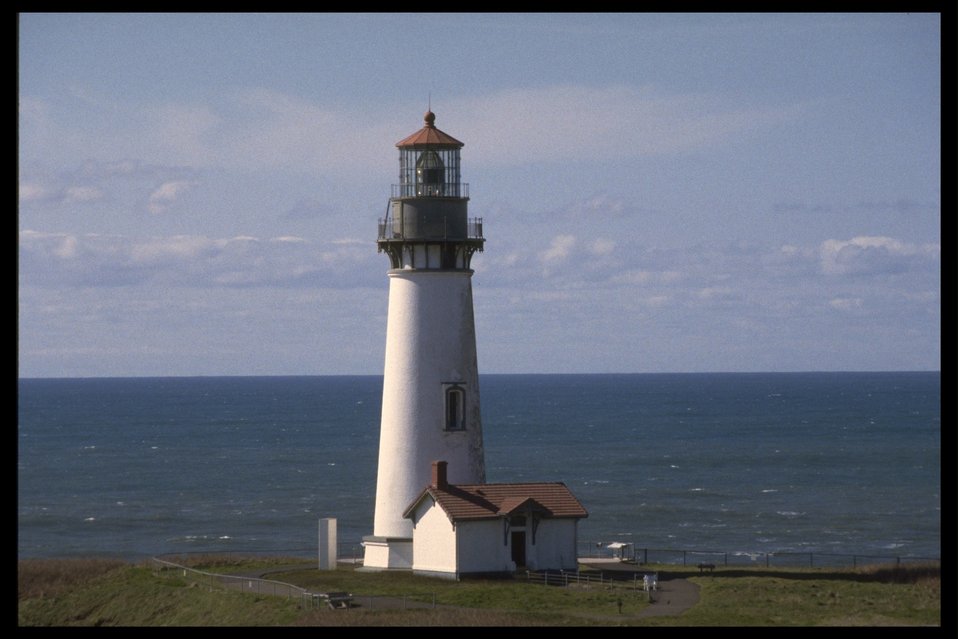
Yaquina Head Lighthouse.